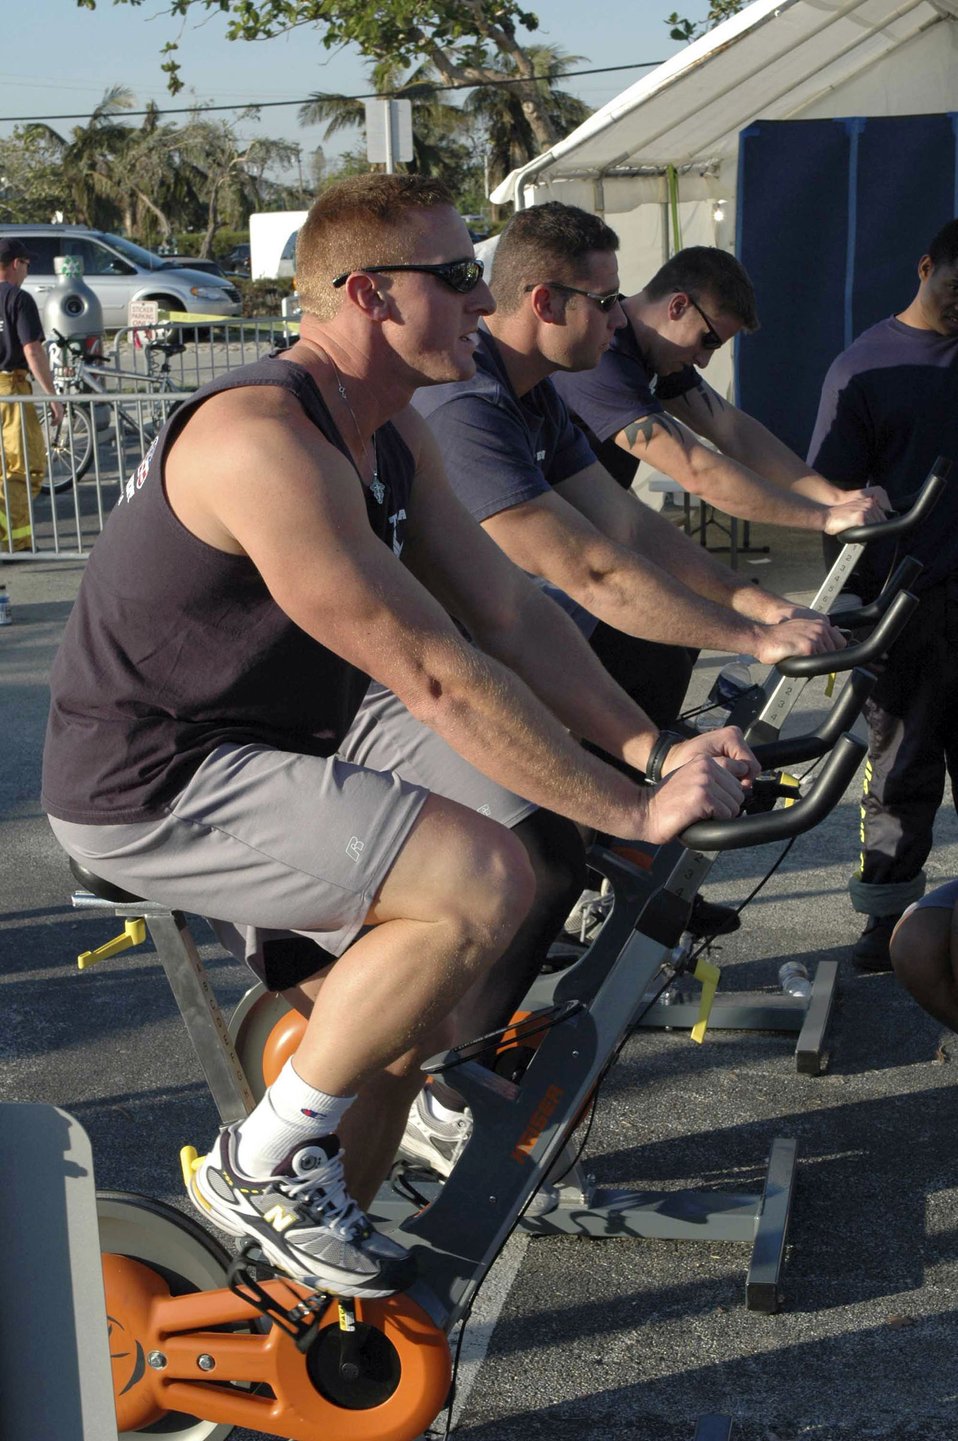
World-class firefighters

DEERFIELD BEACH, Fla. (AFPN) -- Tech Sgt. Mike Melton, Staff Sgt. Harry Myers and Senior Airman Joe Almony warm up on stationary bikes before taking part in an event at the World Firefighter Combat Challenge here. The team won their event with a time of 4 minutes 25.14 seconds. Sergeant Melton is with the 349th Civil Engineer Squadron at Travis Air Force Base, Calif. Sergeant Myers is with the 60th CES at Travis AFB, Calif., and Airman Almony is with 349th CES at Travis AFB, Calif.